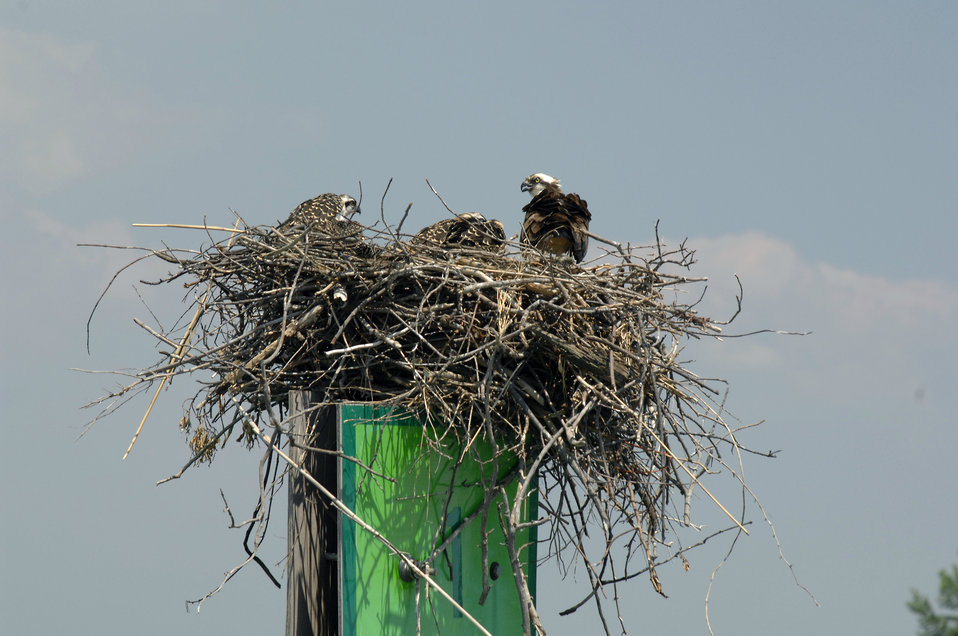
Ospreys nest in the Chesapeake Bay in Maryland on July 15, 2008. The Chesapeake Osprey nesting population is the largest known concentration in the world with approximately 2,000 pairs in the Chesapeake Bay watershed. The osprey feeds exclusively on live fish. Its toes and talons are long and sharp for holding onto slippery fish. Ospreys are large birds, with a body length of about 21-24 inches and a wingspan from 4 1/2 to 5 1/2 feet. The females are larger than males. Their habitats include shallow water estuaries, lakes, and rivers.